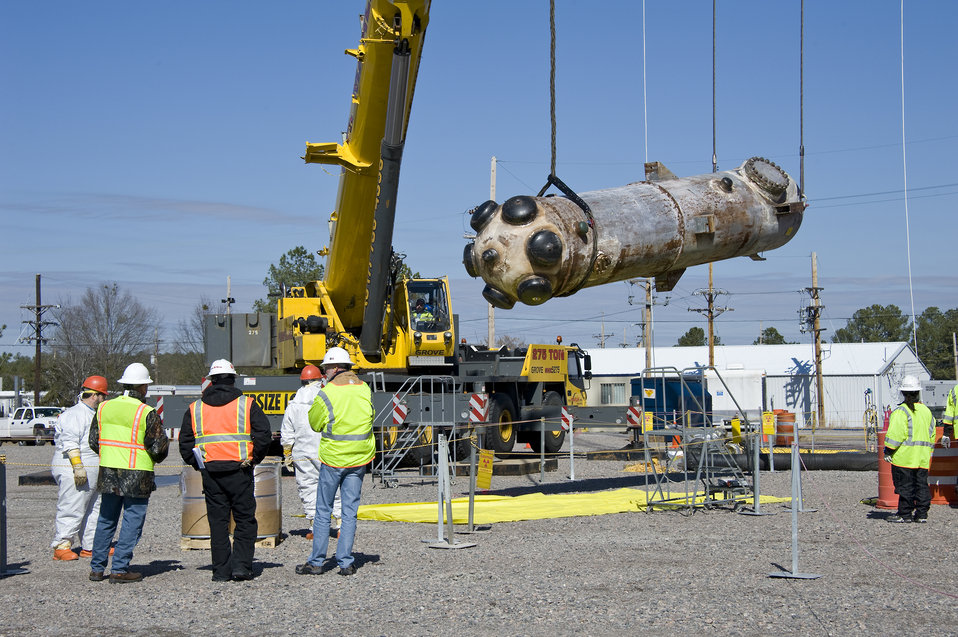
HWCTR steam generator

Work is under way to decommission the Heavy Water Components Test Reactor, which had been used to test experimental fuel assemblies for commercial heavy-water power reactors. SRS is scheduled to remove the dome of the reactor this month (January 2011). Workers also will displace the reactor vessel and steam generators, grout the remaining structure in place, and install a concrete cover over the reactor’s footprint.